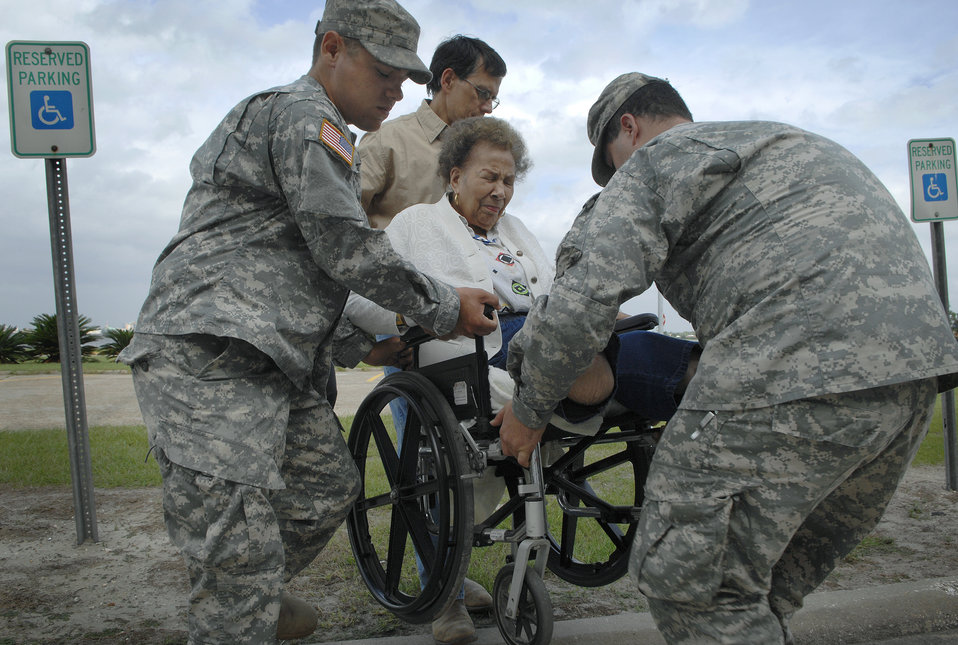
Carried to safety

The Mayor of Lake Charles, La., Randy Roach along with soldiers of the Louisiana Army National Guard help Mrs. Katy Jackson, 89, into the Lake Charles Civic Center to be processed and loaded into a bus evacuating to Shreveport, La., in anticipation of Hurricane Ike's landfall of Sept. 12.